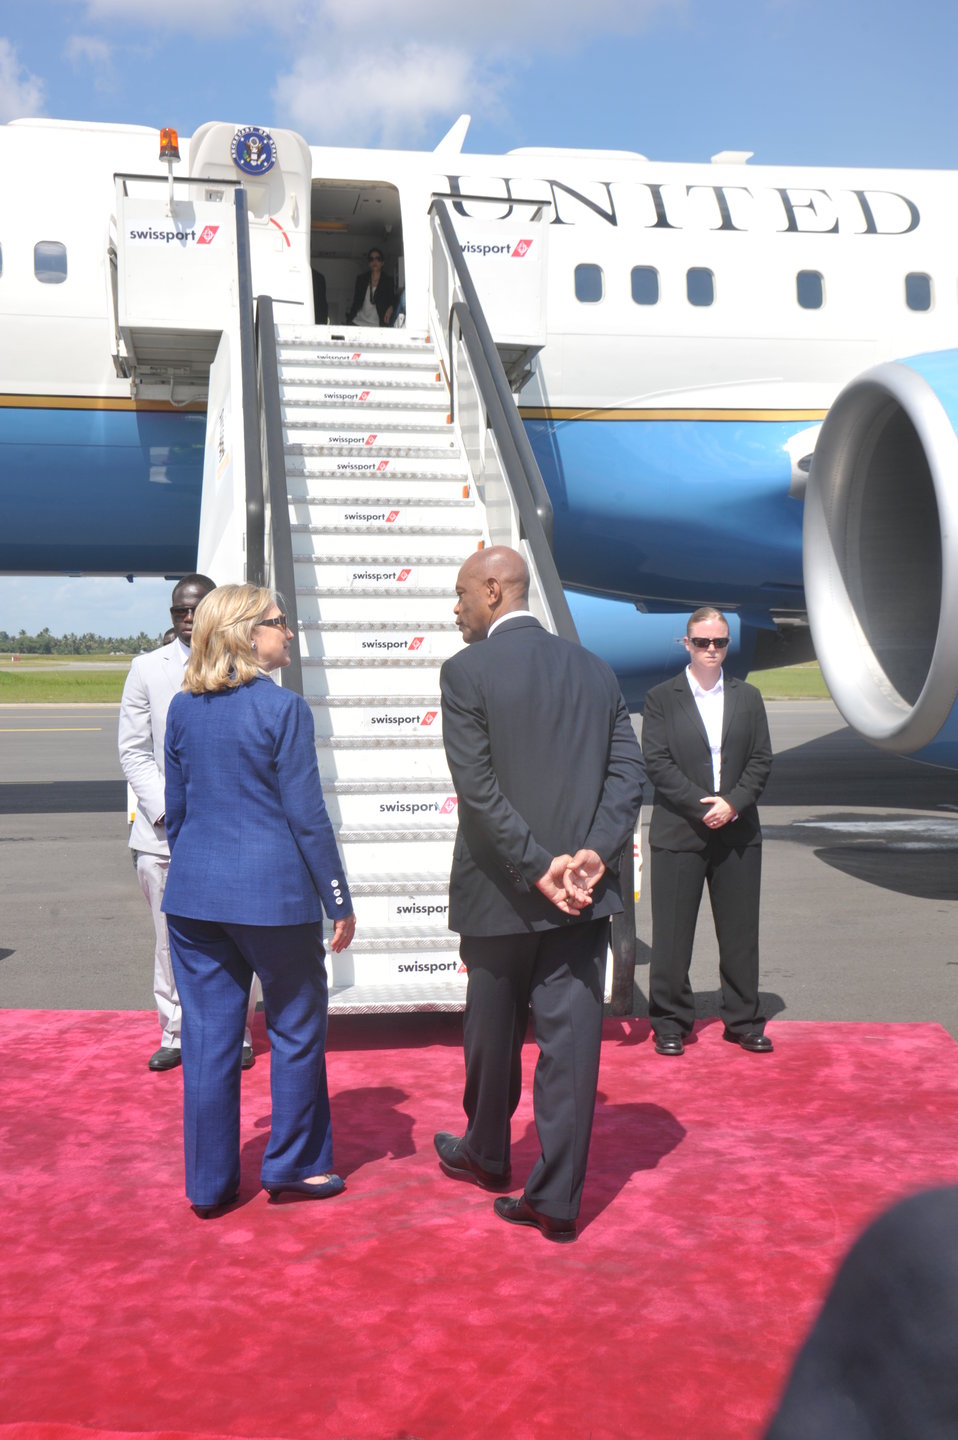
Secretary Clinton Speaks With Ambassador Lenhardt

U.S Secretary of State Hillary Rodham Clinton speaks with U.S. Ambassador to Tanzania Alfonso E. Lenhardt before departing Dar es Salaam, Tanzania, on June 13, 2011.